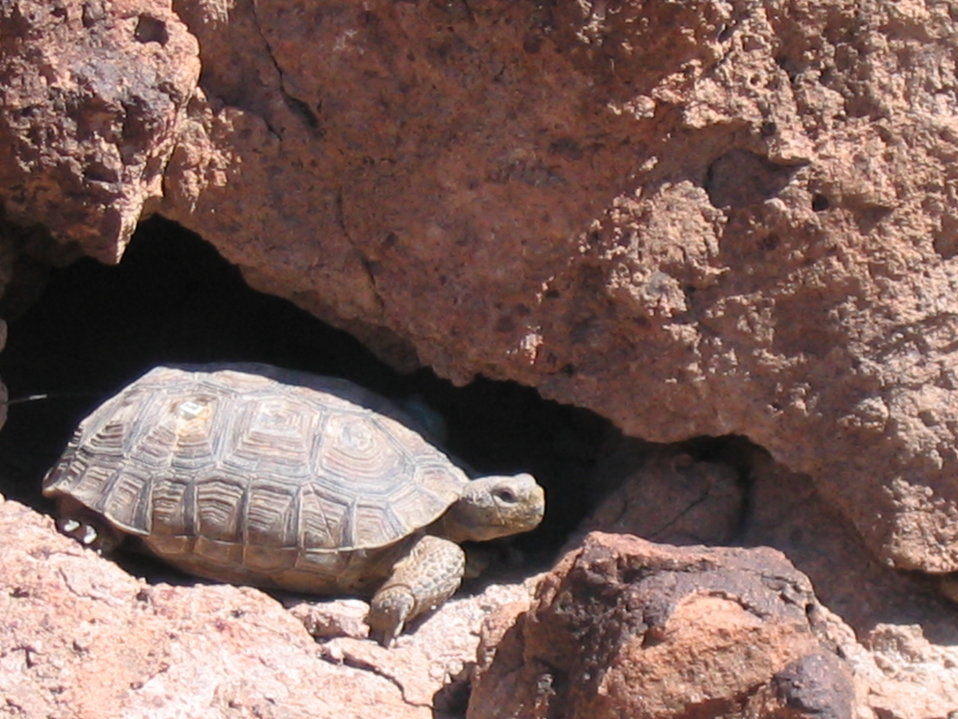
Mojave Desert Tortoise (Gopherus agassizii)

Desert tortoise (Gopherus agassizii) commonly known as the Mojave desert tortoise.